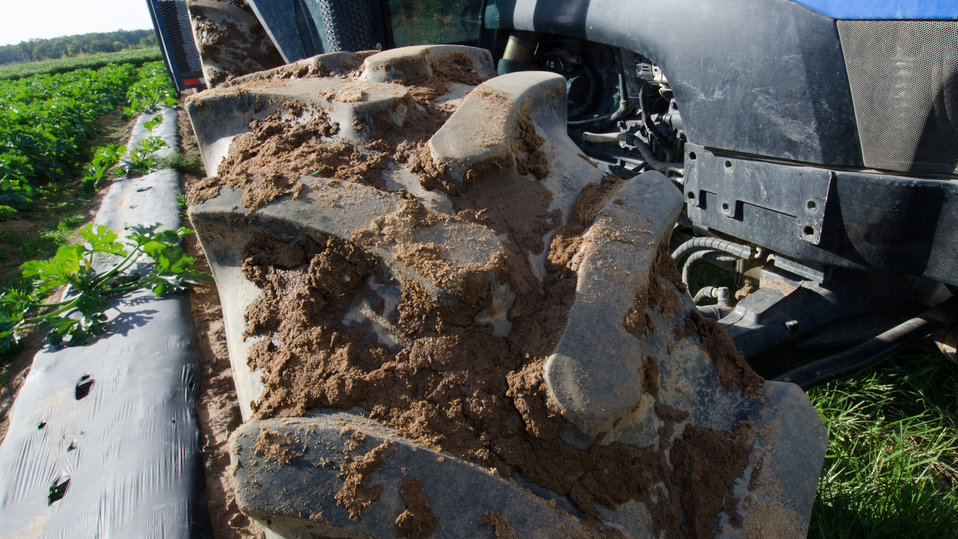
Moist soil clings to the tread of a tractor that stops for a moment, between rows of green zucchini squash at Kirby Farms, in Mechanicsville, VA, on Friday, Sept 20, 2013. Plastic sheeting, far left, is a form of mulch that conserves soil moisture, reduces energy use associated with irrigation, moderates soil temperature, provides erosion control, suppresses weed growth, facilitates the establishment of vegetative cover, improves soil quality, and reduces airborne particulates. For more information, please see www.nrcs.usda.gov/wps/portal/nrcs/detailfull/national/tec...
Kirby Farms is a third-generation family farm that covers 500 acres, and generates produce and grains on a year-around operation. The various stages of leaf, flower, and fruit can be seen on this one plant with an immature squash nearly ready for harvesting. Markets prefer the squash to be approximately eight inches in length when they are tender. Full-grown squash reach three feet in length and are more fibrous. Some recipes call for zucchini blossoms to be stuffed, fried, or baked, added to a soup, or used as a garnish over a meal. Kirby Farms devotes 200 acres of the farm to eggplant, spinach, beets, tomato, jalapeno peppers, melons and a variety of greens. Soybeans and small grain are grown on the remaining 300 acres. The fertile Virginia soil and their management practices, allows Kirby Farms to double and triple crop fields with rotational crop selection. Wholesalers, who buy from this farm, sell the produce to major supermarkets in the Mid-Atlantic region, from North Carolina to Maryland. Restaurateurs in the local area prepare and serve their harvest to patrons in the Greater Richmond Region.